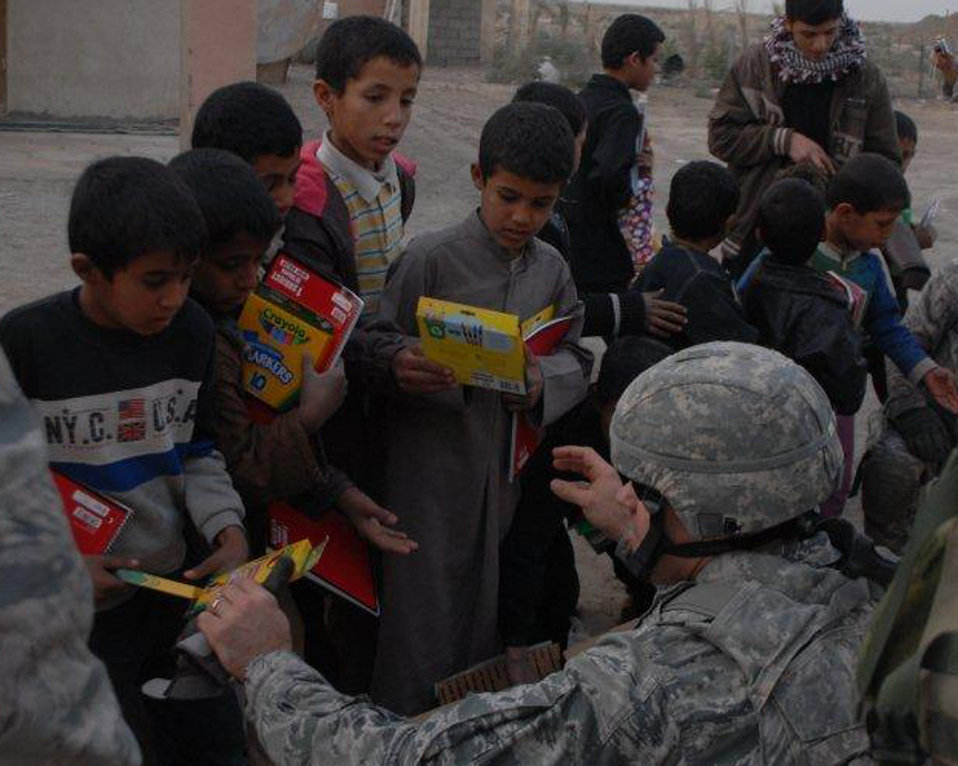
Airmen donate school supplies to local Iraqi children

U.S. Air Force Master Sgt. Brent Baker, Echelon Above Division-Advise and Train munitions advisor and Fairport, N.Y., native, hands markers and crayons to local Iraqi children Dec. 16 at Ur Elementary School near Tallil Air Base, Iraq. Sergeant Baker is deployed from Minot Air Force Base, N.D.